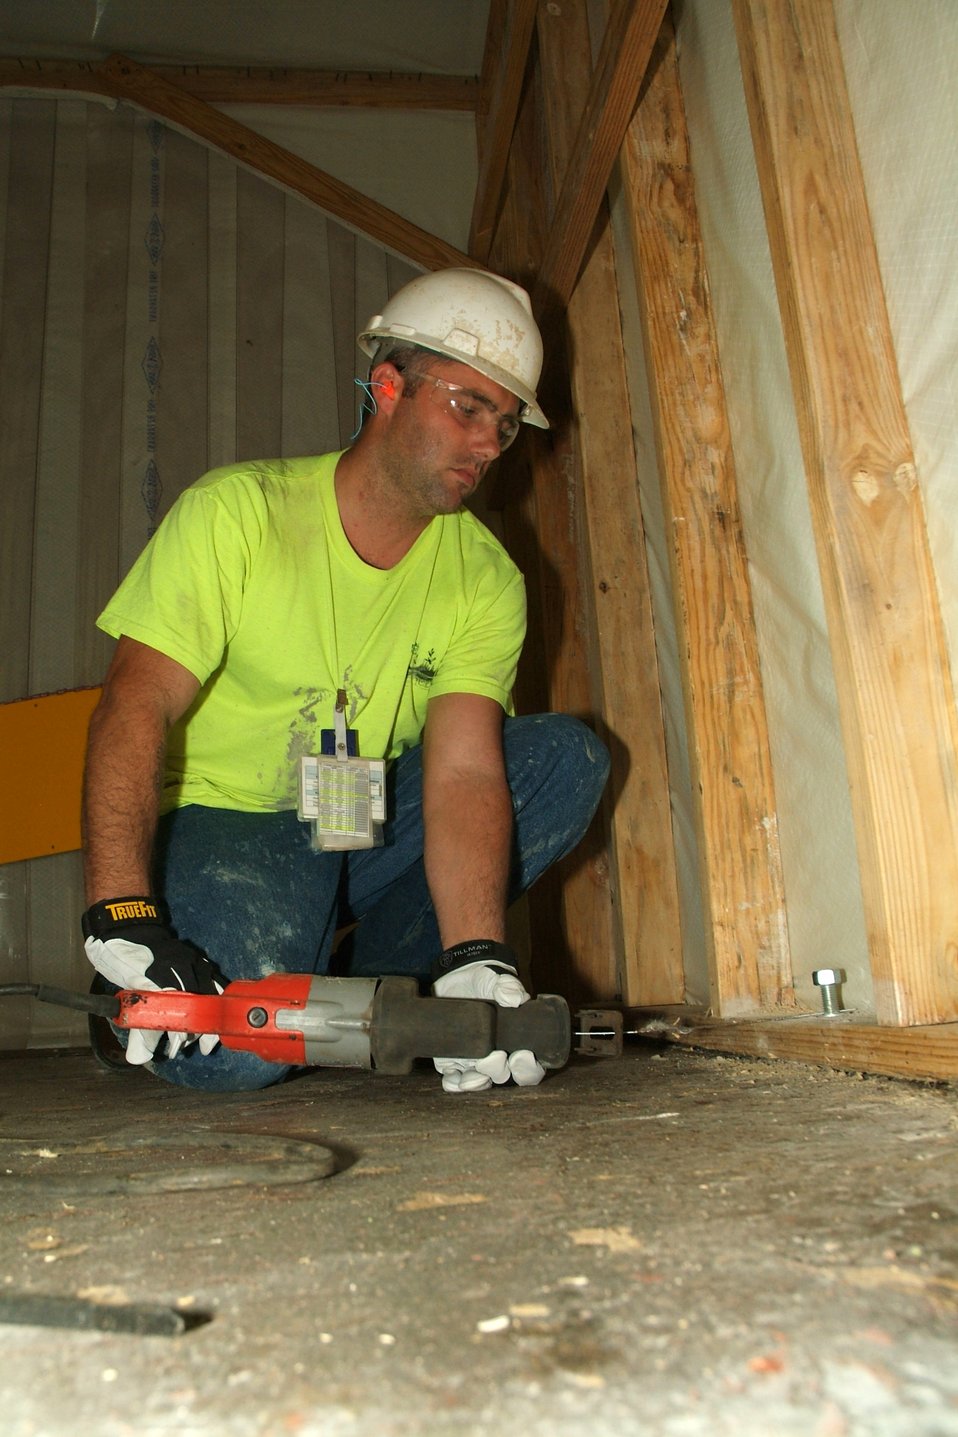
Jason Cochran - Paducah

Jason Cochran cuts a bolt off a temporary boundary control station in the Feed Plant at DOE’s Paducah Site. LATA-Kentucky hired Cochran with Recovery Act funding.